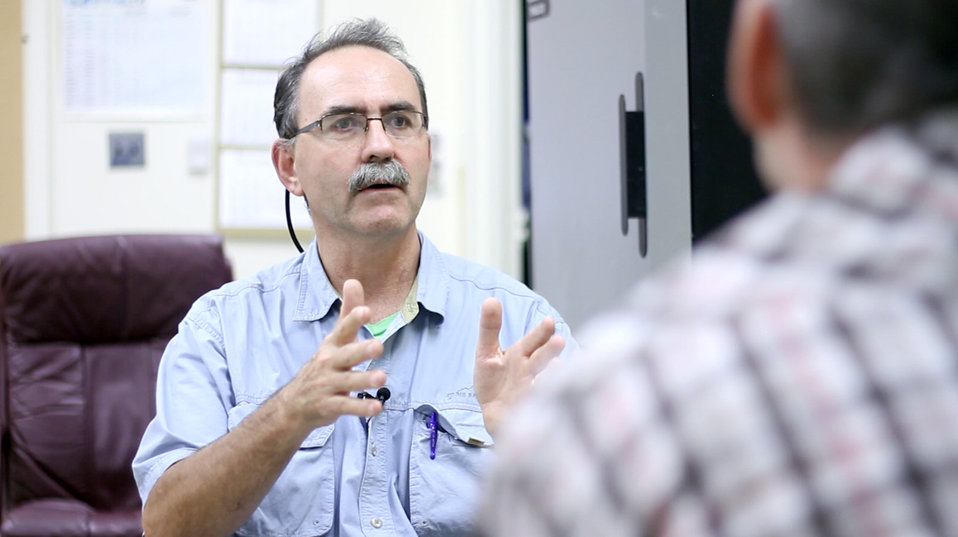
Buz 2

Buz Kloot interviews Rick Haney, a research soil scientist with USDA’s Agricultural Research Service in Temple, Texas, for the video series.